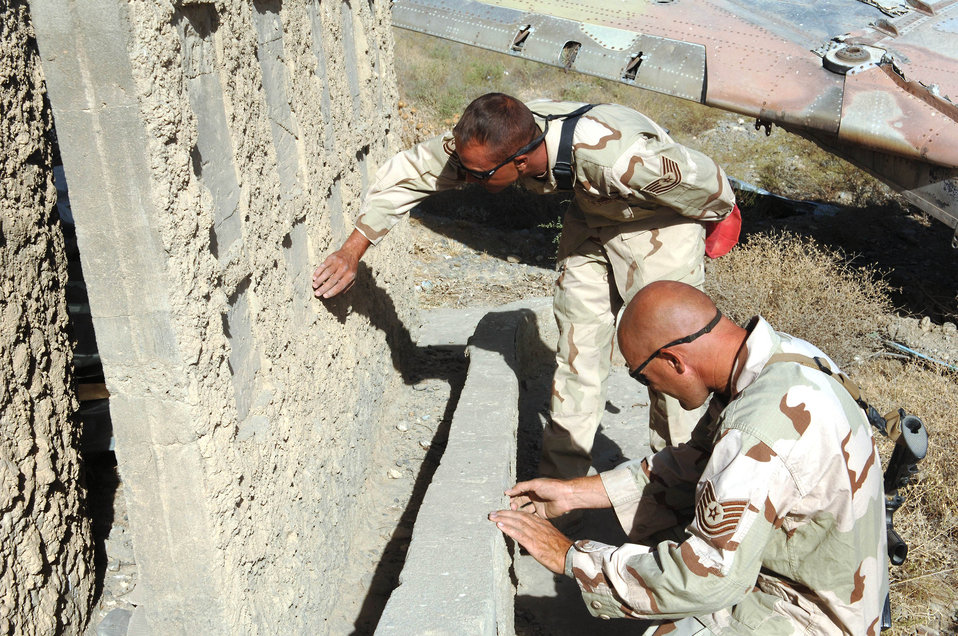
Red Horse sergeants preserve Soviet military heritage

Tech. Sgts. David Keeley and Raymond Ross examine a memorial found on Bagram Air Base, Afghanistan. Through research, it was discovered that the memorial honored five Soviet aviators posthumously awarded Hero of the Soviet Union, equivalent of the U.S. Medal of Honor. The sergeants, who are assigned to the 1st Expeditionary Red Horse Group, are taking steps to save and restore the monument.